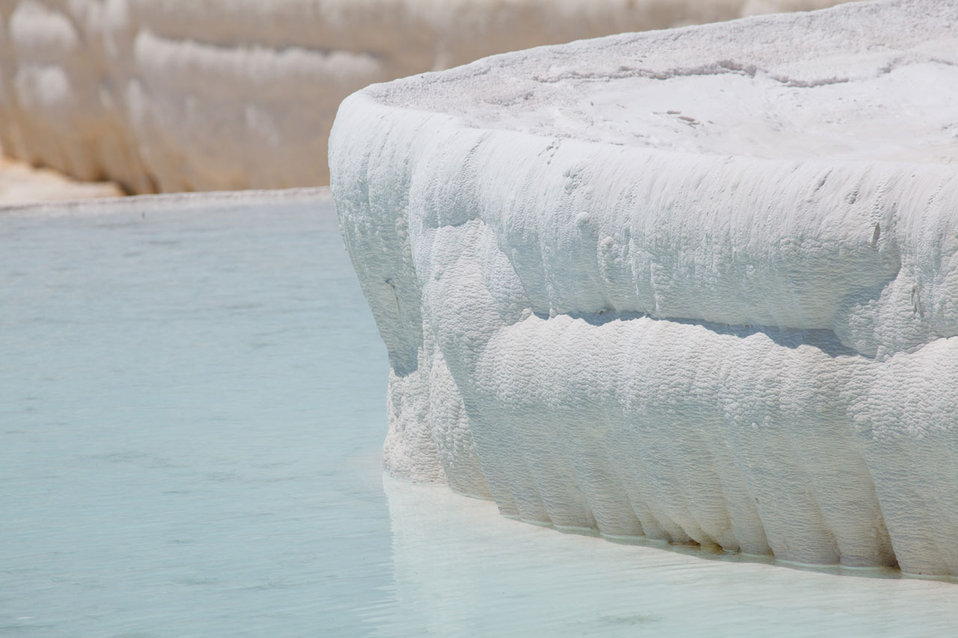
Pamukkale travertine detail.